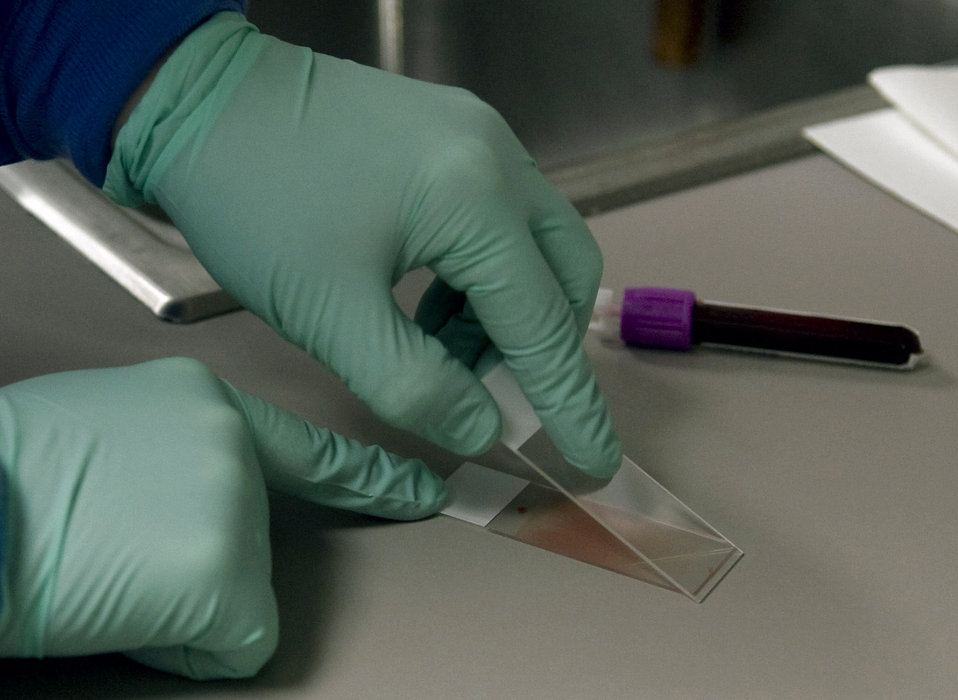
Blood work

Staff Sgt. Toni Thompson prepares a speciman slide March 4 at Eielson Air Force Base, Alaska. Specimens are made into peripheral smears for examination under a microscope for different diseases. Sergeant Thompson is a 354th Medical Group clinical lab technician.